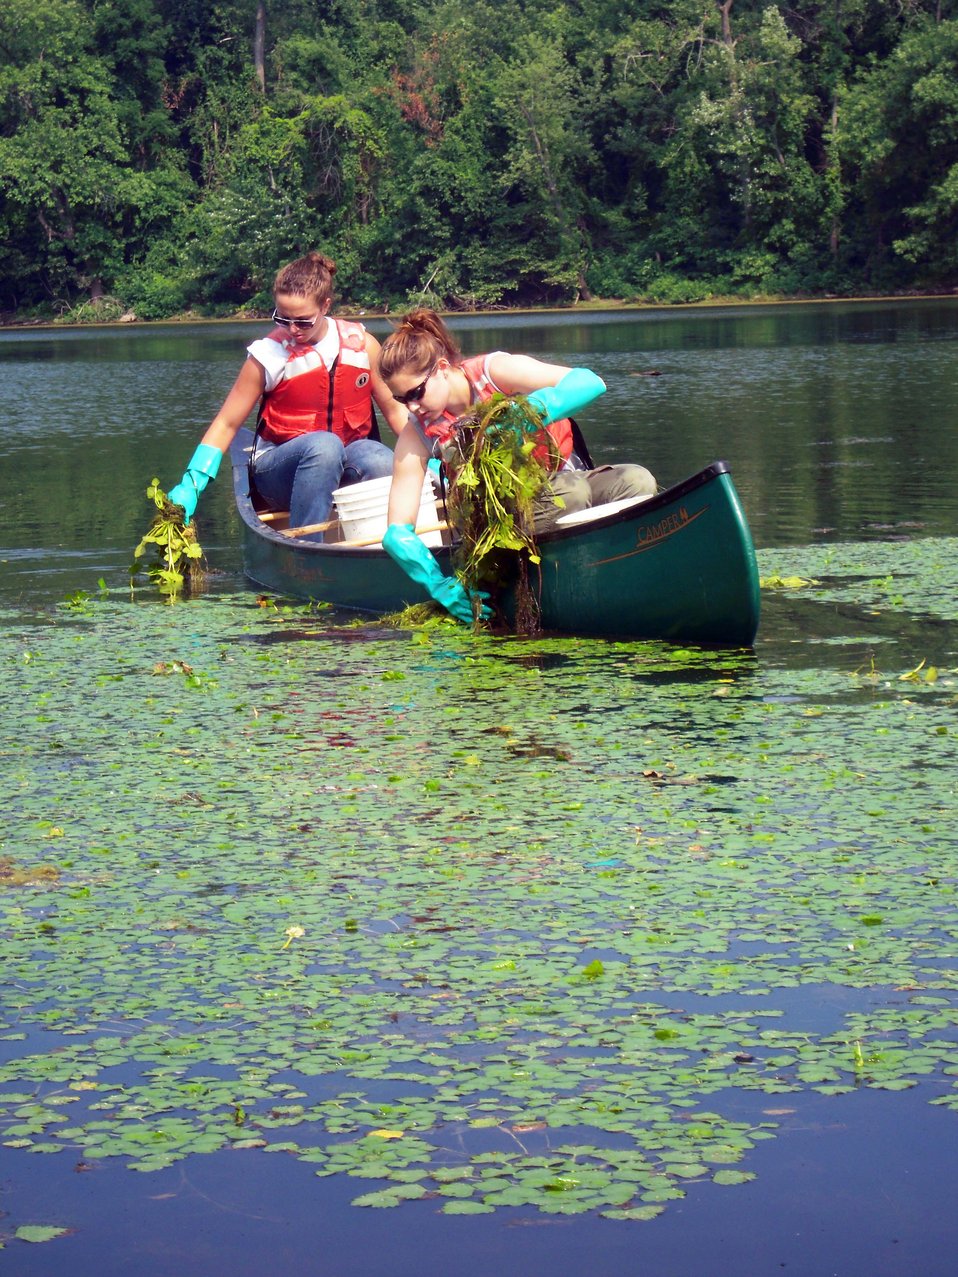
YCC crew removing water chestnut